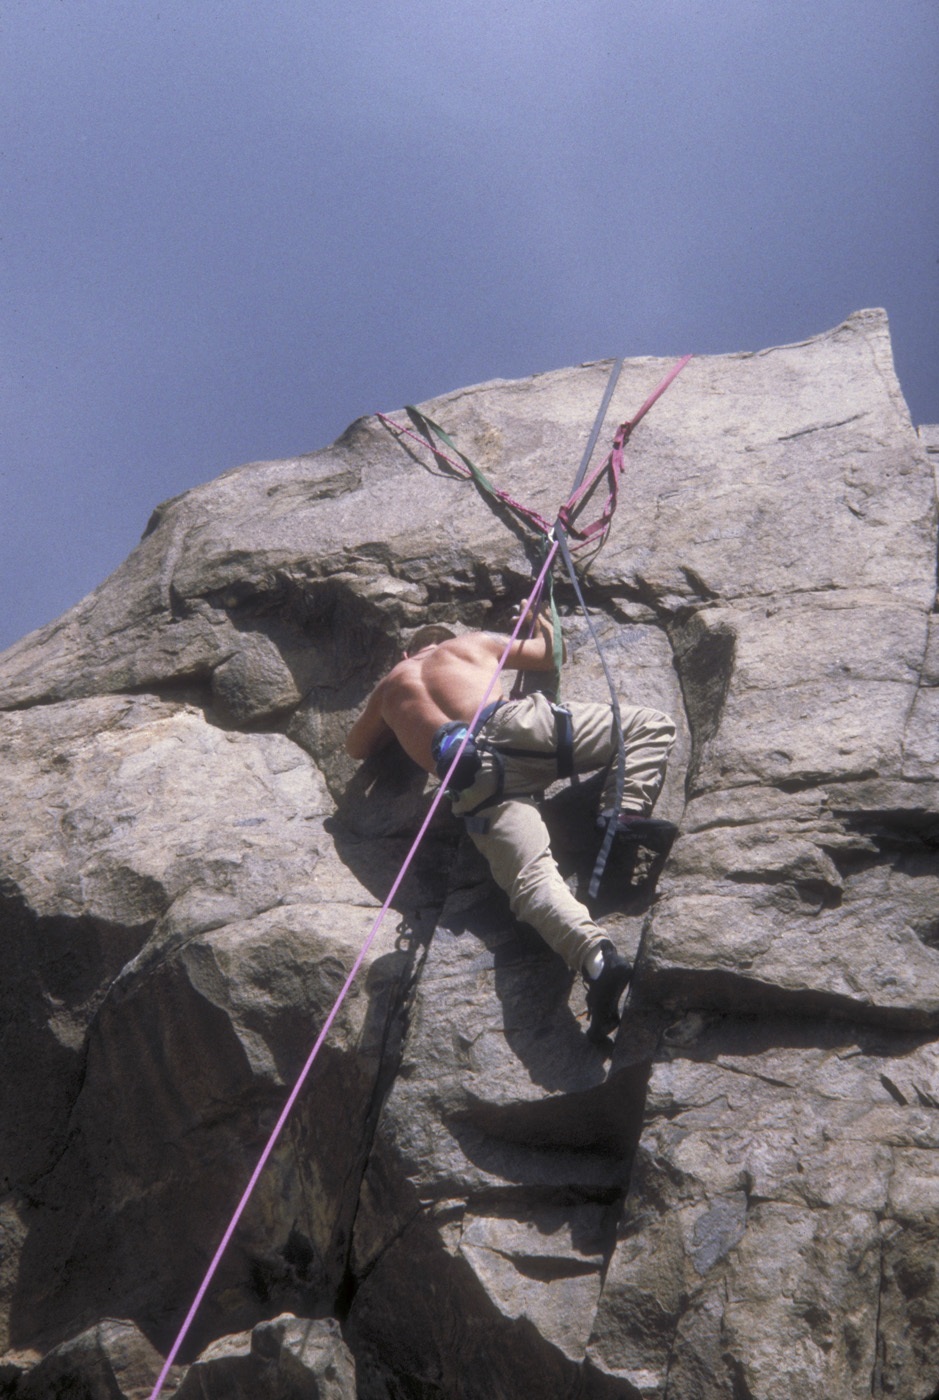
Rock climbing in Penitente Canyon.